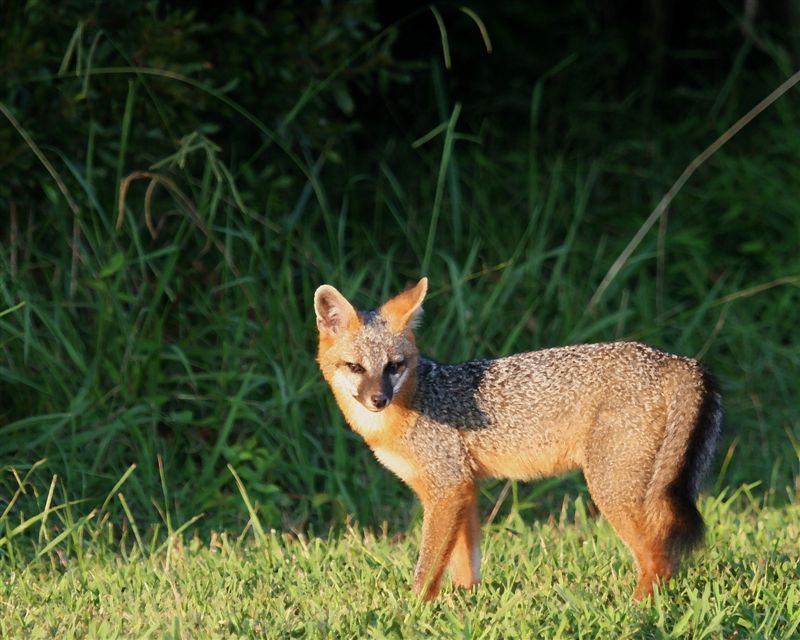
Gray fox at Back Bay National Wildlife Refuge in Virginia.